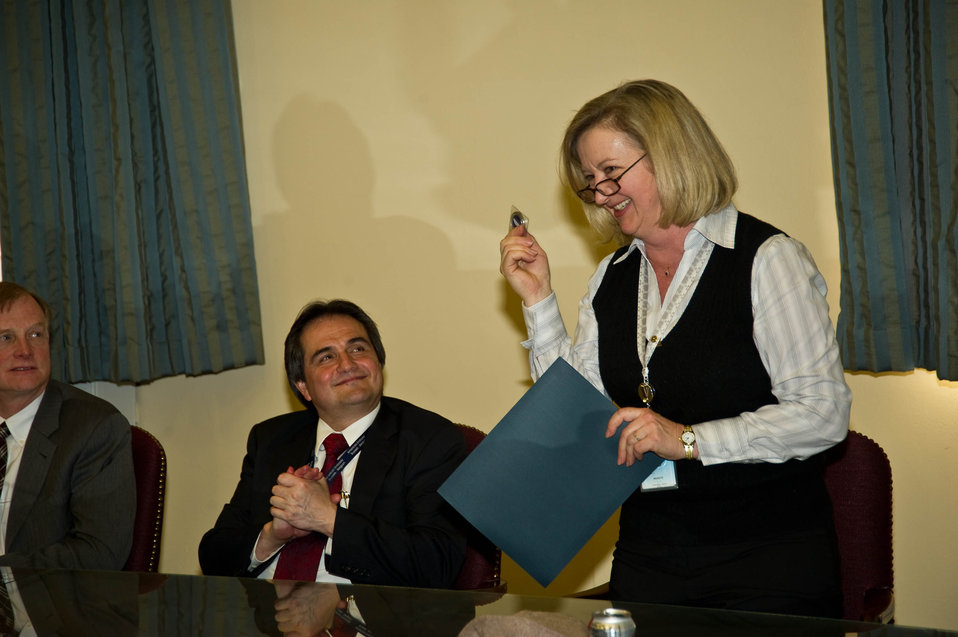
Smithsonian Institution National Museum of Natural History Research Scientist and Manger in the Feather Identification Lab Dr. Carla Dove gives a certificte and special recognition coin for donating the most specimens to the Smithsonian's Feather Lab toUSDA APHIS Wildlife Service Biologist Idaho State director George Graves on Tuesday, Mar. 19, 2013.